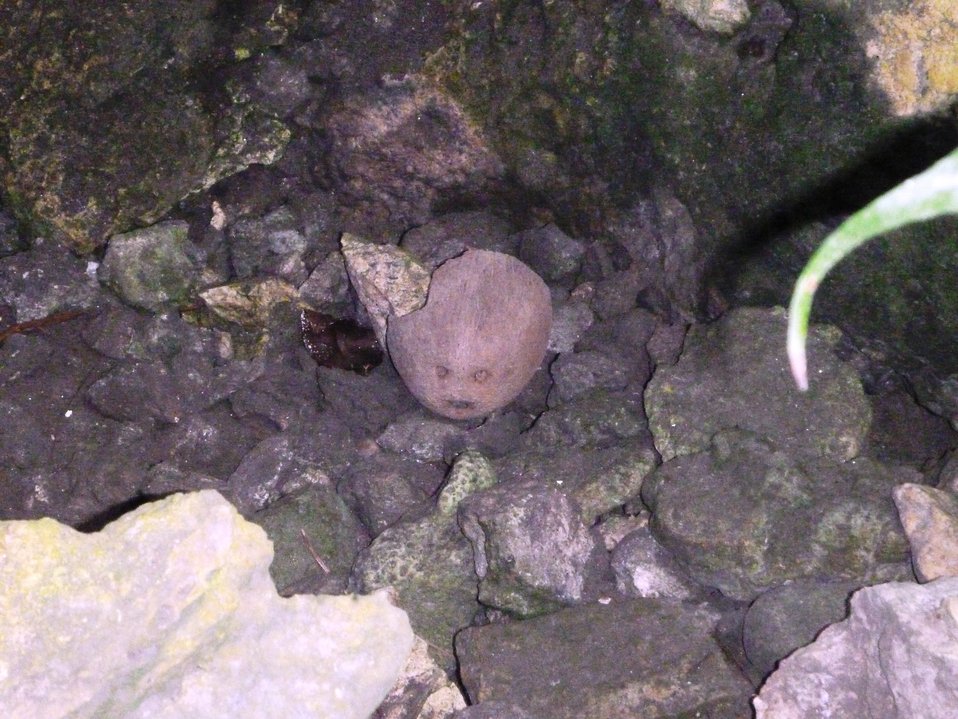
Camp Shutterbug 2011 prize winner

Guam National Wildlife Refuge, Pacific Islands
Photo: Mikaela Frias, age12
Second place, Culture
This coconut shell, the remains of a ghost crab's dinner, recalls a native legend, 'Why the coconut has a face.'